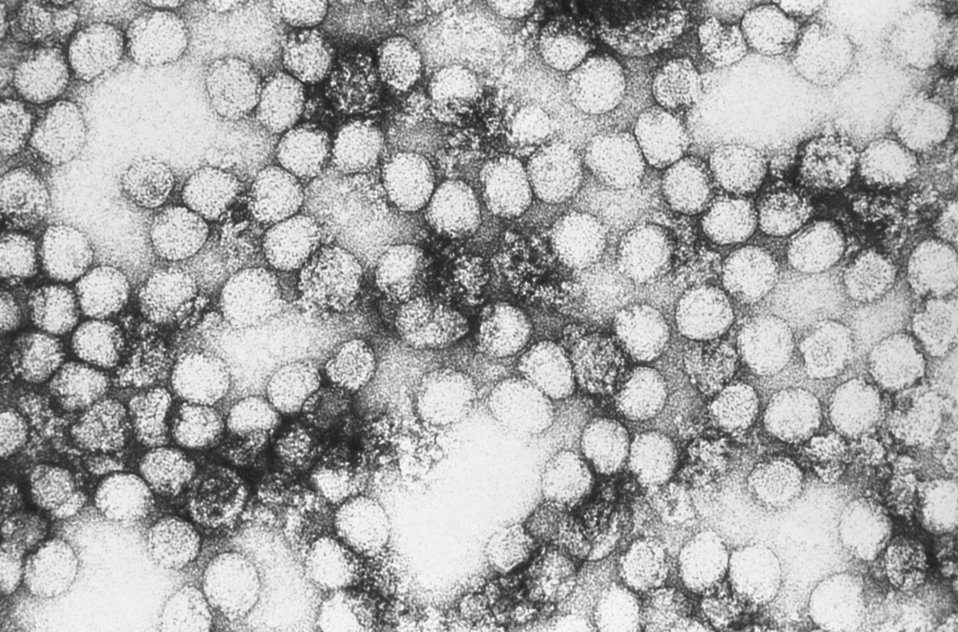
An electron micrograph of Yellow Fever Virus virions.